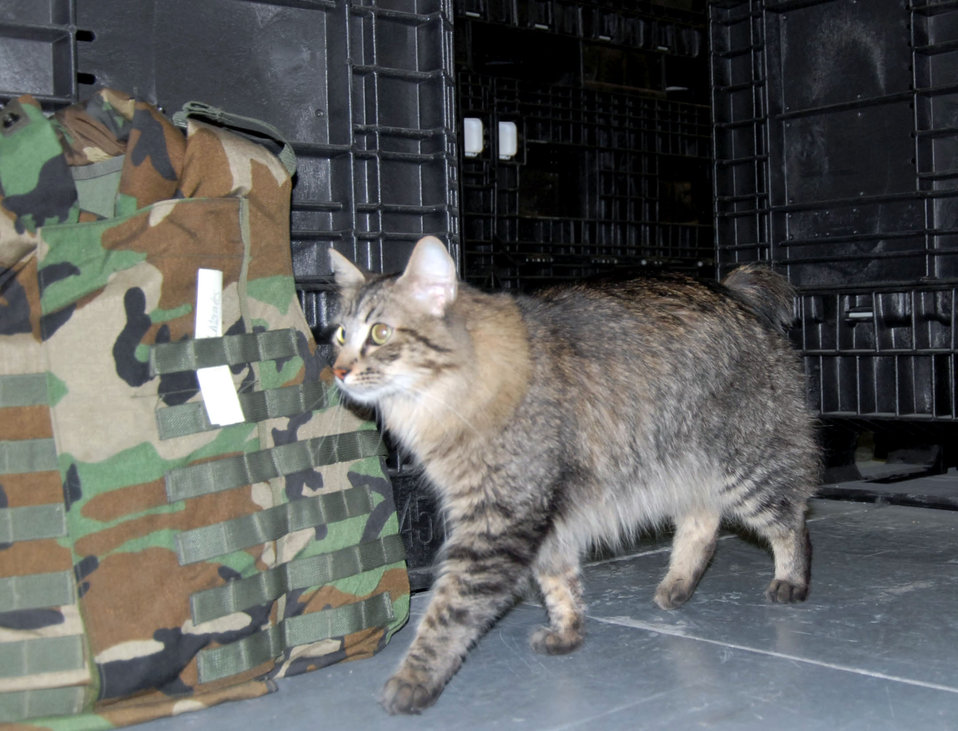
Supply unit uses 'military working cat' to control critters

Wizzo hunts for his next victim as he prowls through the labyrinth of crates, mobility bags and other equipment used to deploy at Edwards Air Force Base, Calif. Wizzo, a rodent deterrent for the base supply warehouse, was adopted by supply group members in 2006 to help control the rodents in the warehouse, which cause damage to the bags and pose possible health risks.